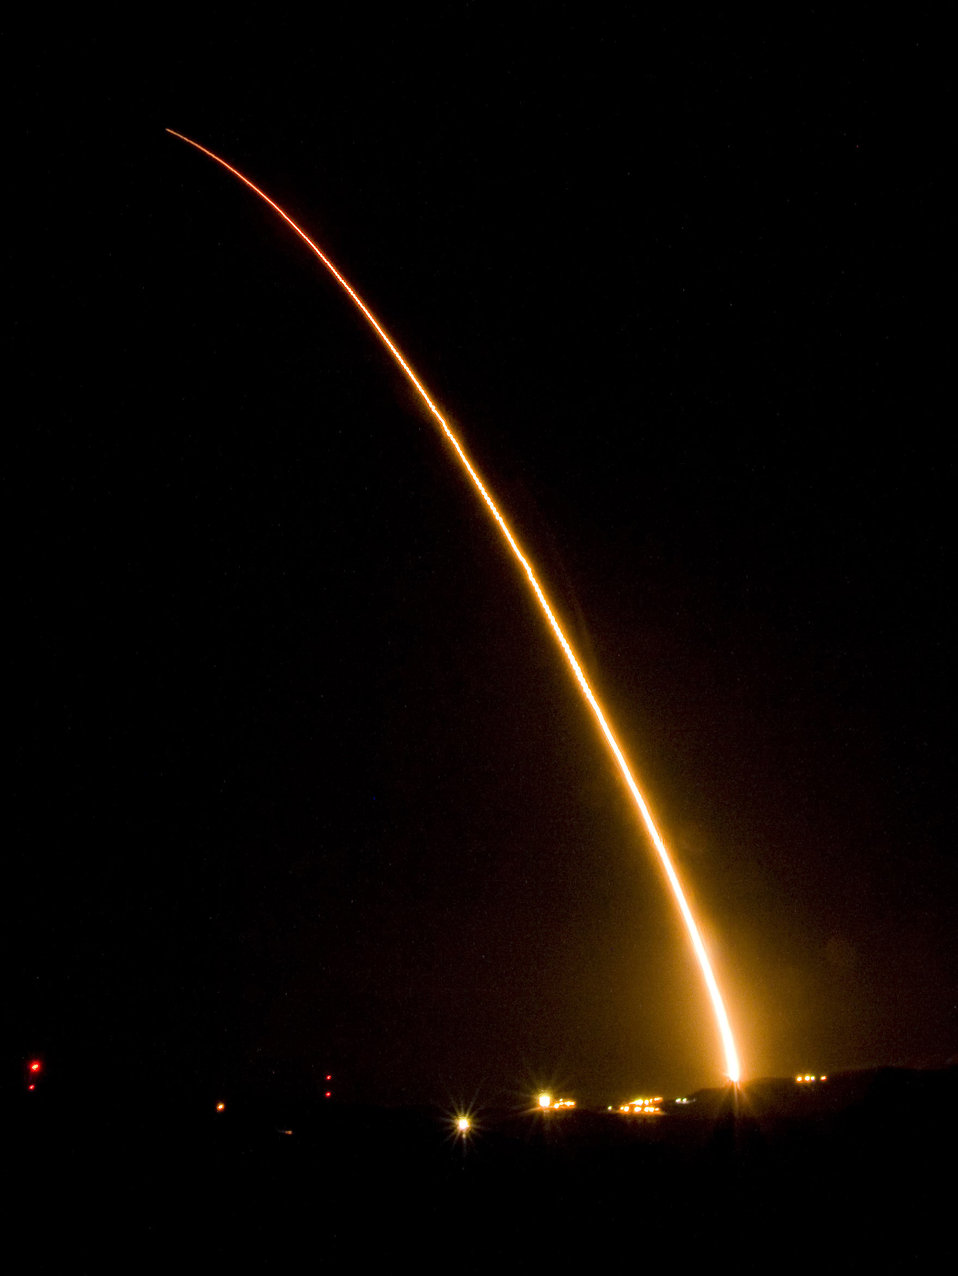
Vandenberg officials launch Minuteman III missile

A Minuteman III intercontinental ballistic missile successfully launches at 1 a.m. Nov. 5 from Vandenberg Air Force Base, Calif. The missile was configured with a National Nuclear Security Administration test assembly in which a single unarmed re-entry vehicle traveled approximately 4,190 miles to their pre-determined targets near the Kwajalein Atoll in the Marshall Islands.